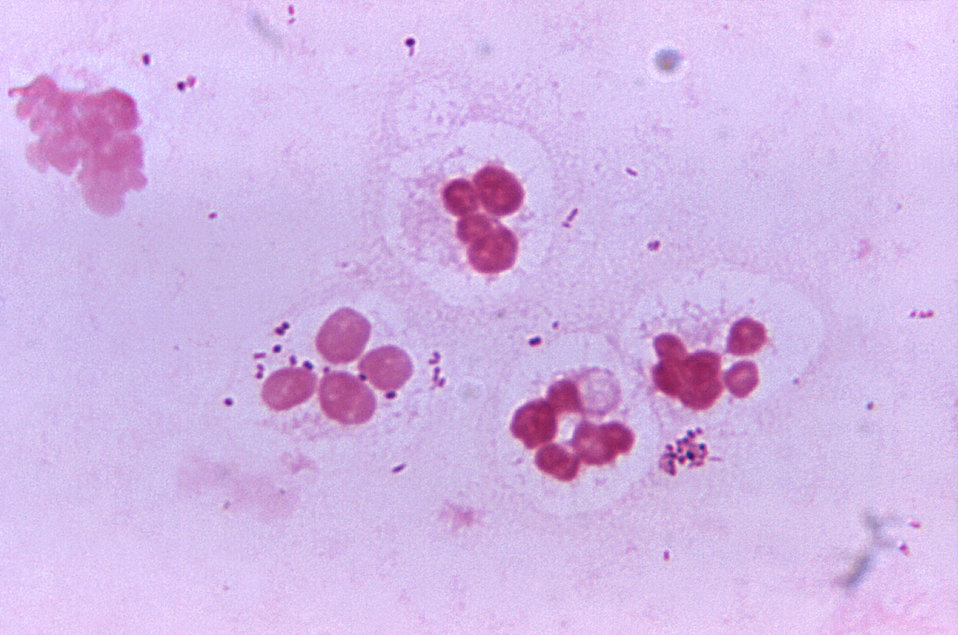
A photomicrograph of a urethral exudate from a patient with "nonspecific" urethritis; Magnified 1125X.